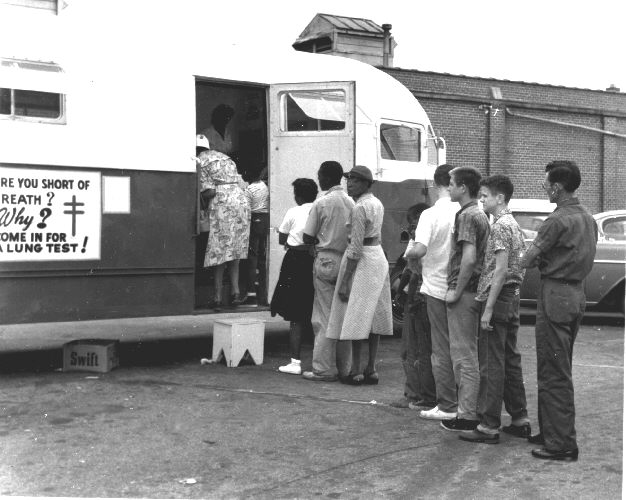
Tuberculosis testing in mobile clinic.